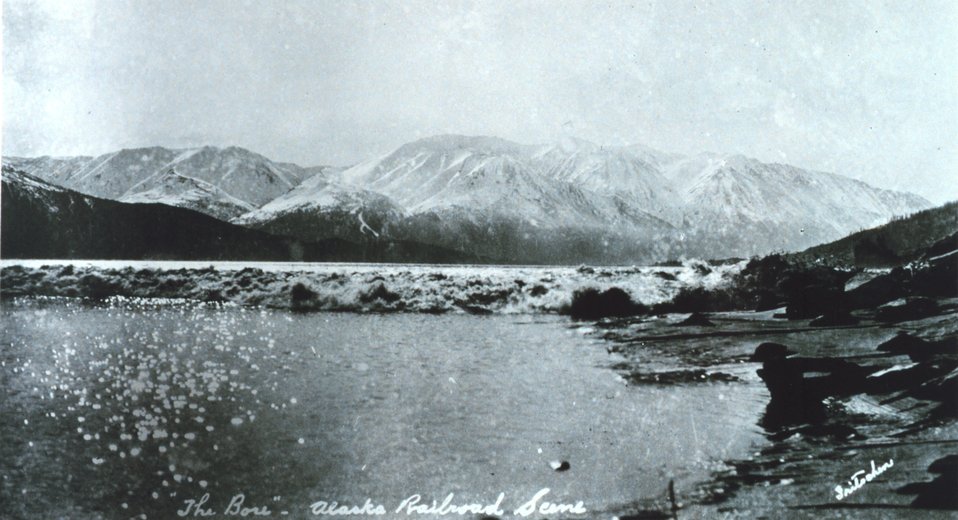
The tidal bore in Turnagain Inlet.